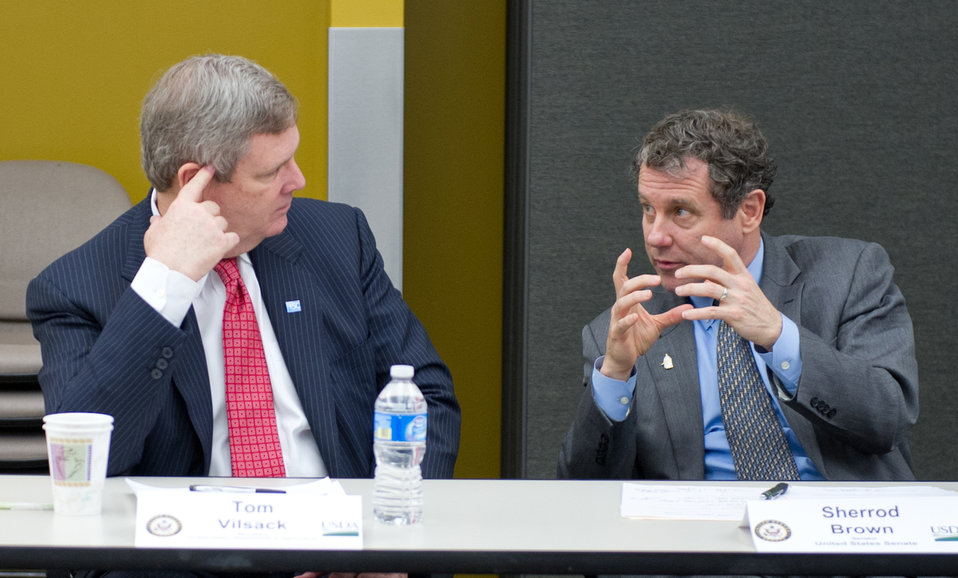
Agriculture Secretary Tom Vilsack (left) and Senator Sherrod Brown (OH) hold a roundtable discussion on economic innovation in Cleveland, Ohio on March 16, 2012 on a visit to Ohio and Michigan.